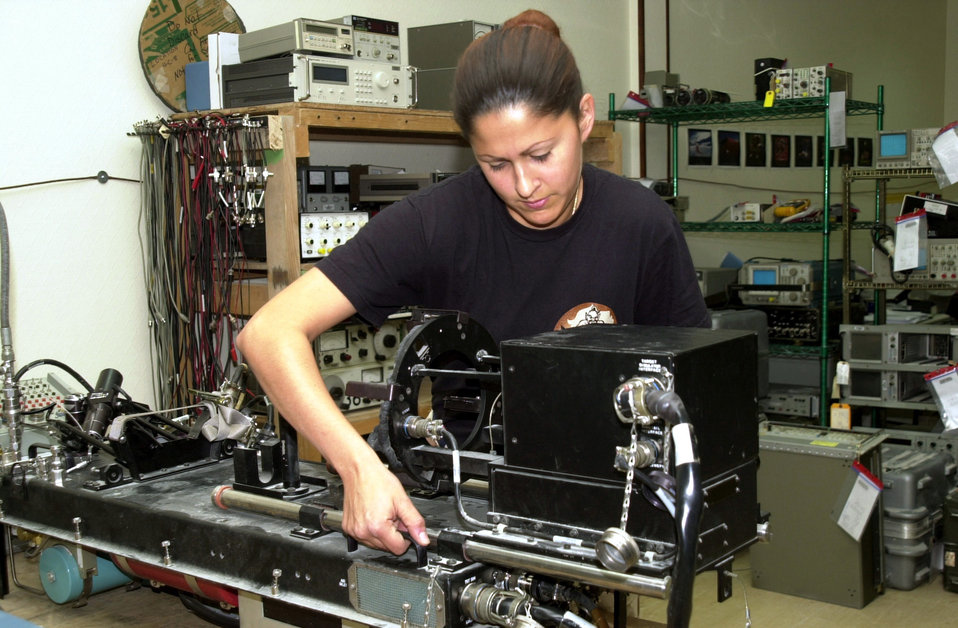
Practicing precision

SOUTHWEST ASIA -- Staff Sgt. Andrea Lopez prepares to turn a digital test set on its side so she can inspect its circuit cards. The test set, which checks out guidance systems on missiles, was brought to the precision measurement equipment laboratory because of power-up and self-test failures. Sergeant Lopez is a PMEL technician with the 379th Expeditionary Maintenance Squadron and is deployed from Aviano Air Base, Italy.